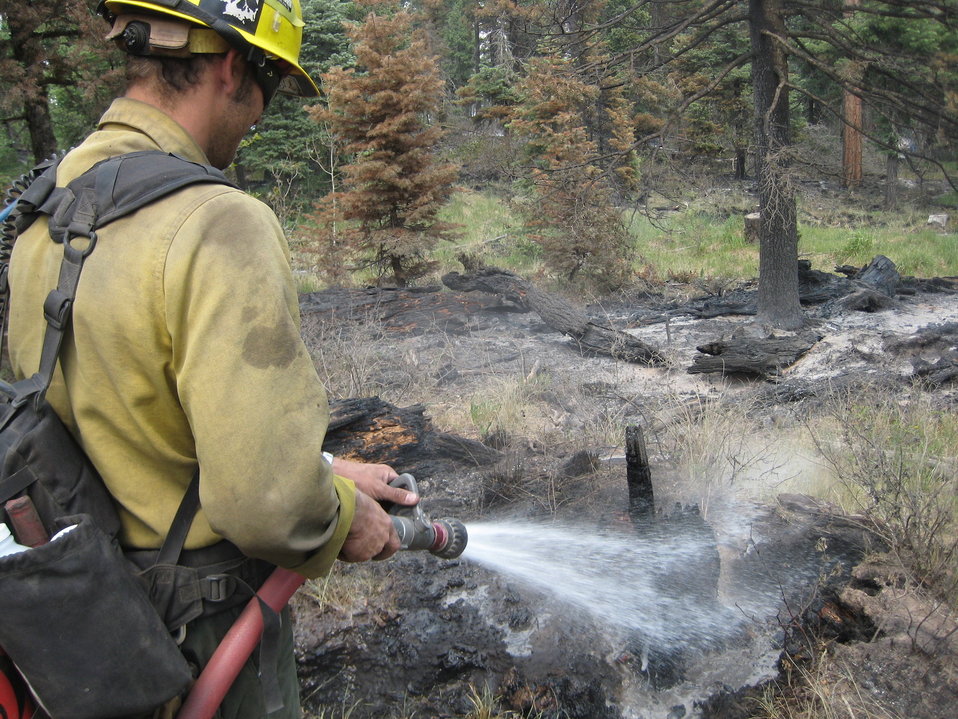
Firefighters wet down hot spots at the Little Sand Wildfire in the San Juan National Forest near Pagosa Springs, CO, on Tuesday, June 12, 2012. The wildfire was started by a lightening strike on May 13, 2012. The fire is in rugged and inaccessible terrain, north of the Piedra River, and is currently estimated at 14,224 acres with 30% containment as of June 20, 2012.